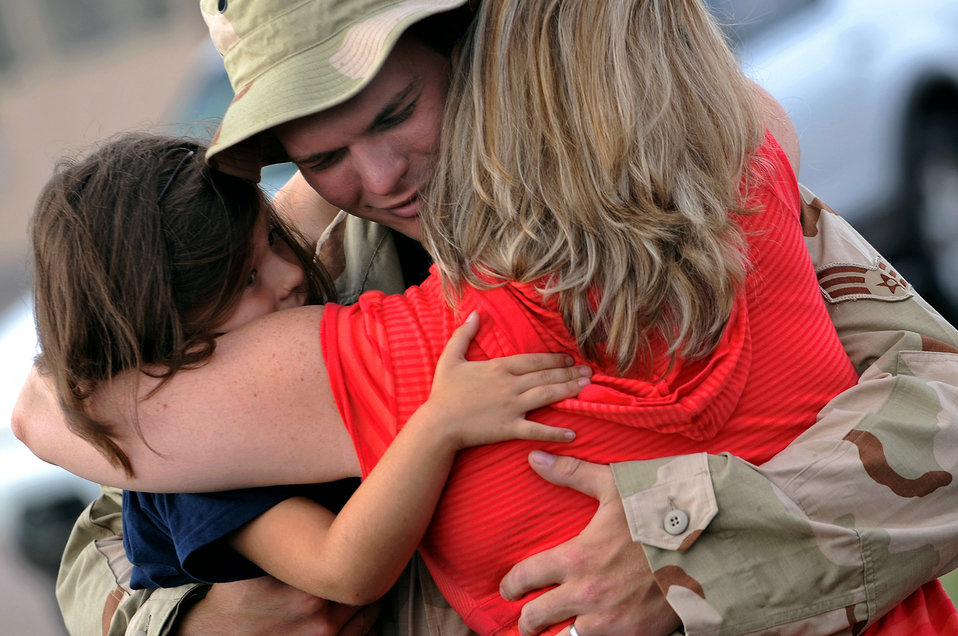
Parting is such sweet sorrow

Senior Airman William Seaborne hugs his wife, Shaina, and 5-year-old daughter, Riley, July 22 at Ellsworth Air Force Base, S.D. Airman Seaborne, a 28th Aircraft Maintenance Squadron hydraulic mechanic, will be deployed to Southwest Asia in support of Operations Iraqi Freedom and Enduring Freedom.